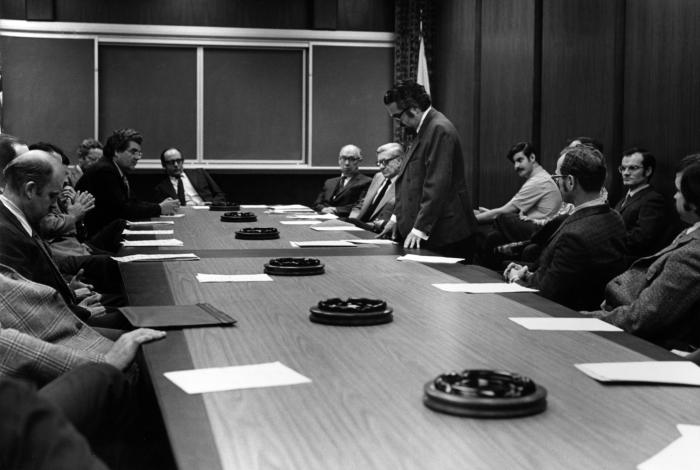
This photograph showed the participants of the Centers for Disease Control and Prevention (CDC) Surveillance Course for the Pan-American Health Organization (PAHO). The course was held in the CDC's Atlanta offices from April 5, through December 10, 1971.